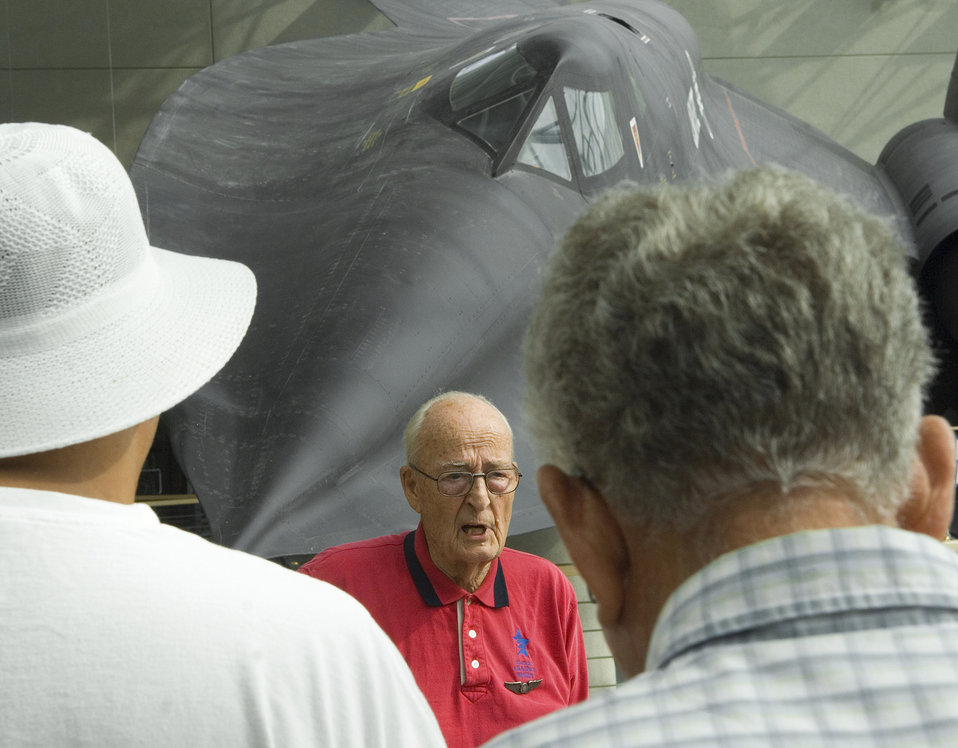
Air Force Week mixes past, present, future at museum

Retired Maj. Roger Ihle conducts a tour of the Strategic Air and Space Museum during Air Force Week in the Heartland Aug. 13 in Ashland, Neb. Museum officials hosted a day dedicated to the legacy of airpower providing special Air Force demonstration teams and displays.